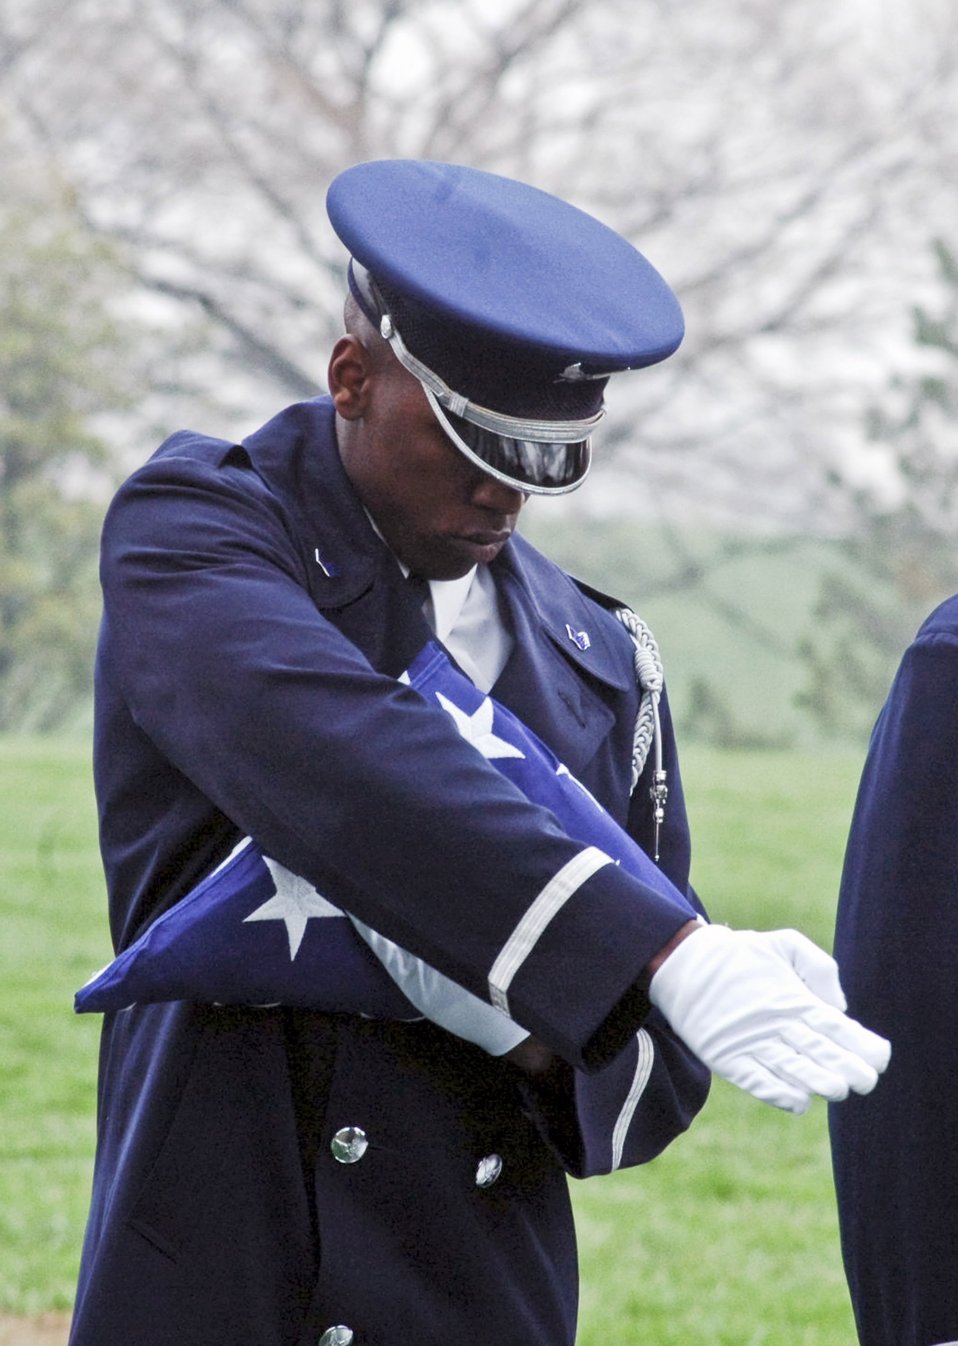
A distinctive fold

An Airman from the U.S. Air Force Honor Guard participates in a flag-folding ceremony during a funeral at Arlington National Cemetery, Va.